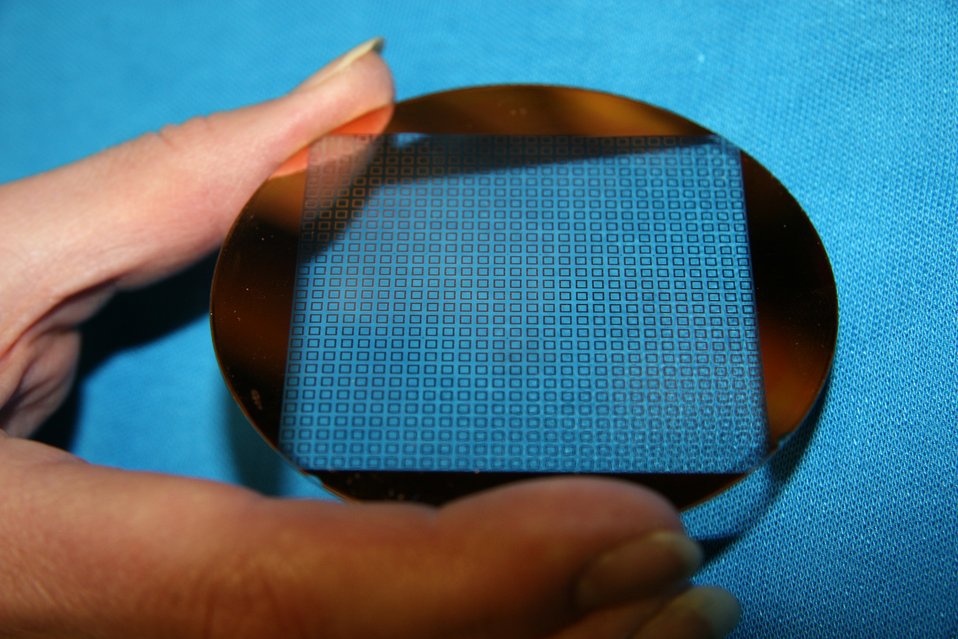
Metafilms; Sub-wavelength resonators

NIST researchers have made metafilms of both yttrium iron spheres (each about 50 millimeters in diameter) embedded in a matrix, and tiny copper squares etched on a wafer.